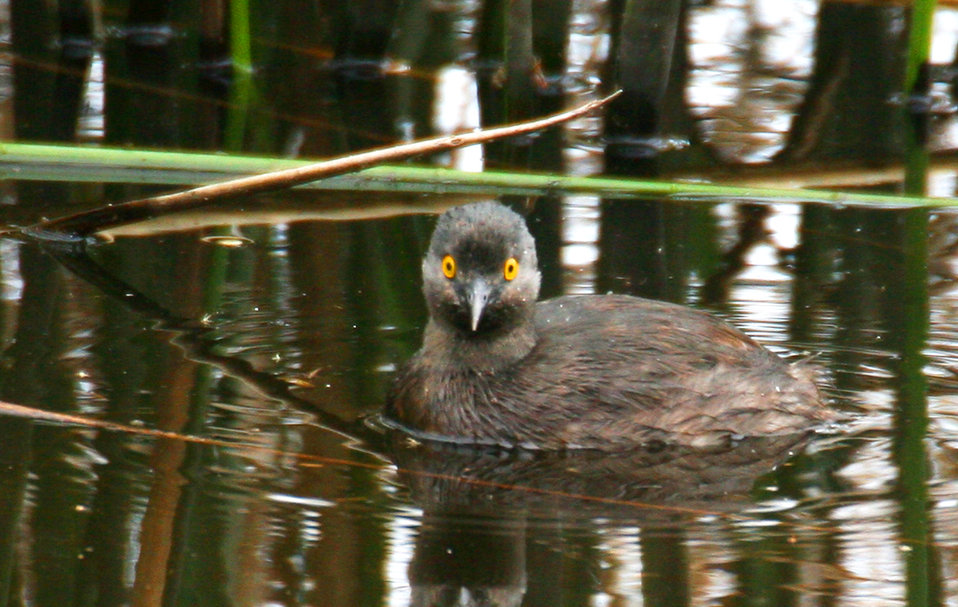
Least Grebe at Santa Ana NWR

The tiny Least Grebe nests in the shallow ponds at Santa Ana NWR.